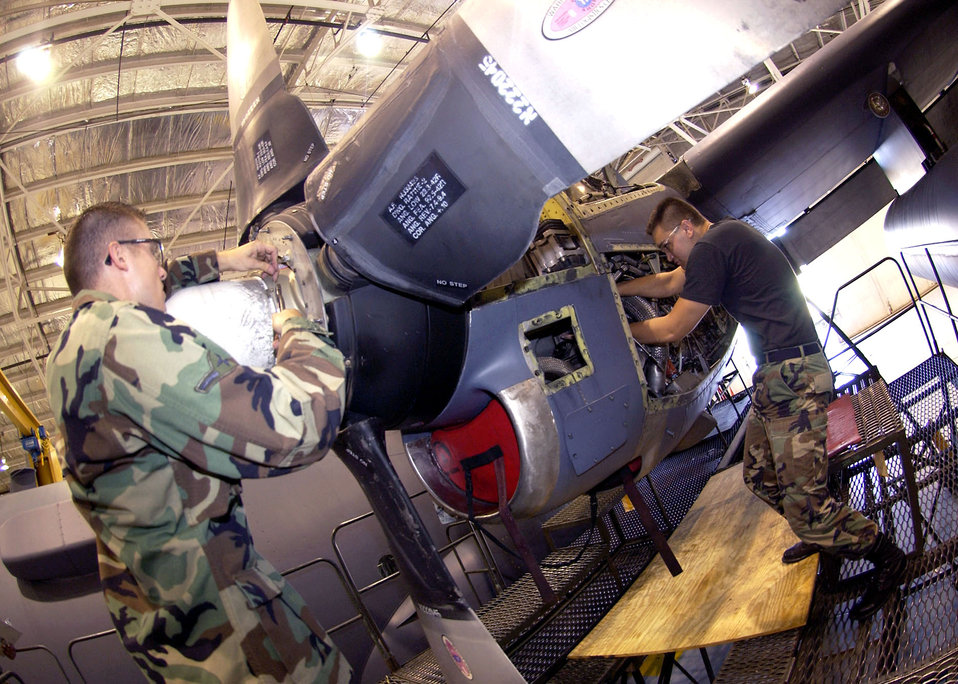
EC-130 tune-up

Airman Nick Sinwell installs safety wire on the dome of an EC-130 Compass Call propeller while Staff Sgt. Sam Gaare tightens a drain valve on the engine at Davis-Monthan Air Force Base, Ariz., on July 18. Both Airmen are assigned to the 355th Equipment Maintenance Squadron.